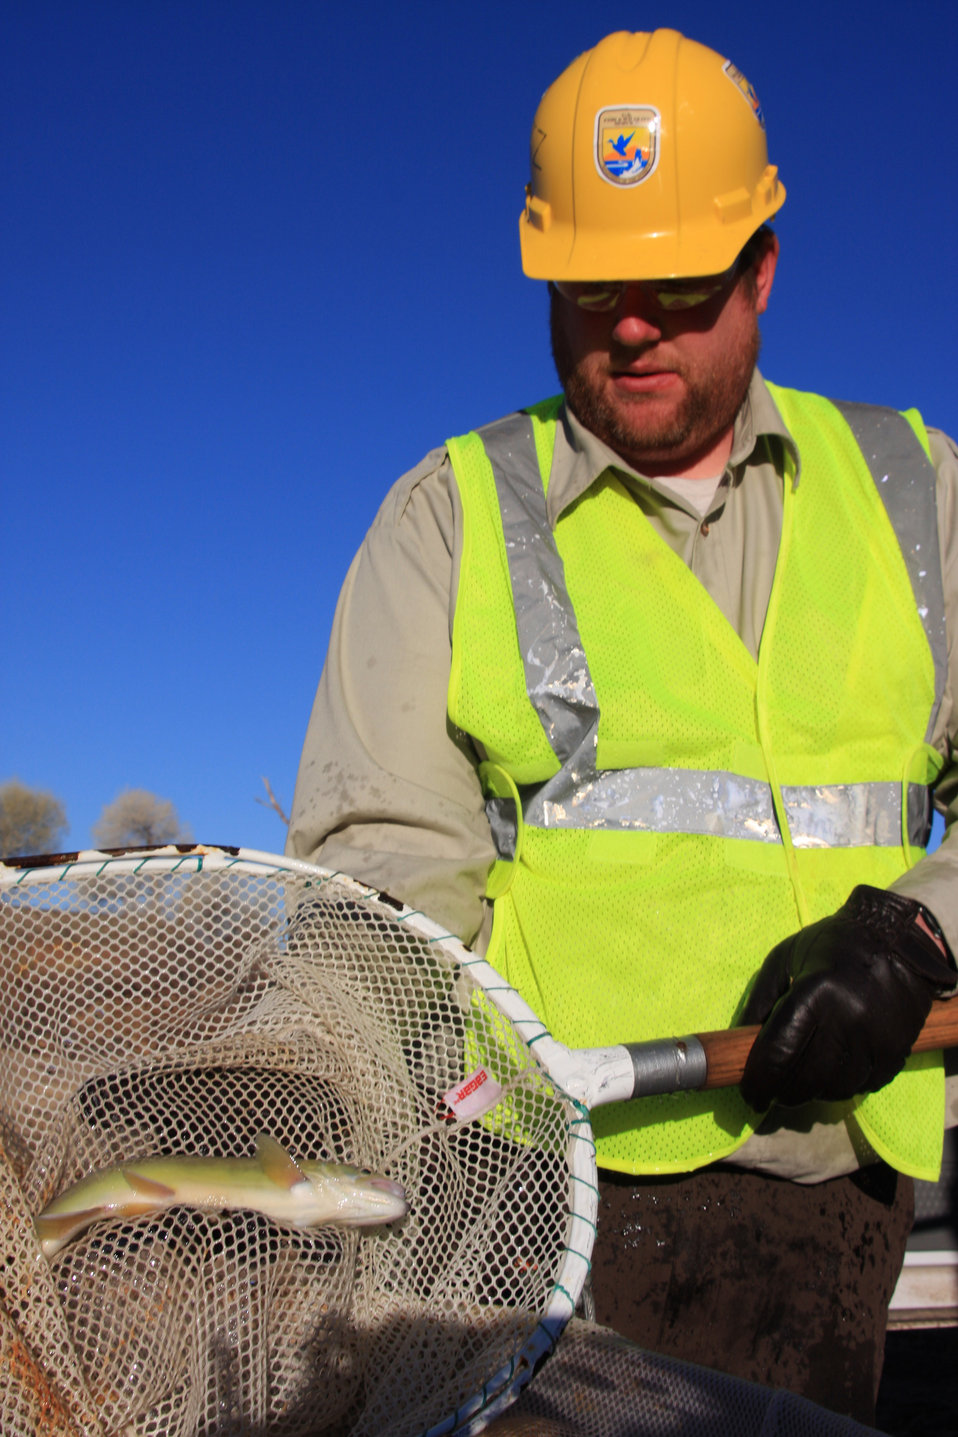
Transporting Gila Trout into 55 Gallon Drum

Jeremy Voeltz, a U.S. Fish and Wildlife Service fishery biologist for the Arizona Fish and Wildlife Conservation Office, transports native Gila trout into 55-gallon drums that will flown up the Pinalenos Mountains to Frye Creek by helicopter as part of a Gila trout stocking project on Feb. 23, 2011. The fish stock came from the Service's Mora National Fish Hatchery in Mora, New Mexico. The Gila trout project, funded by the American Recovery and Reinvestment Act, created the first Gila trout season in Arizona.